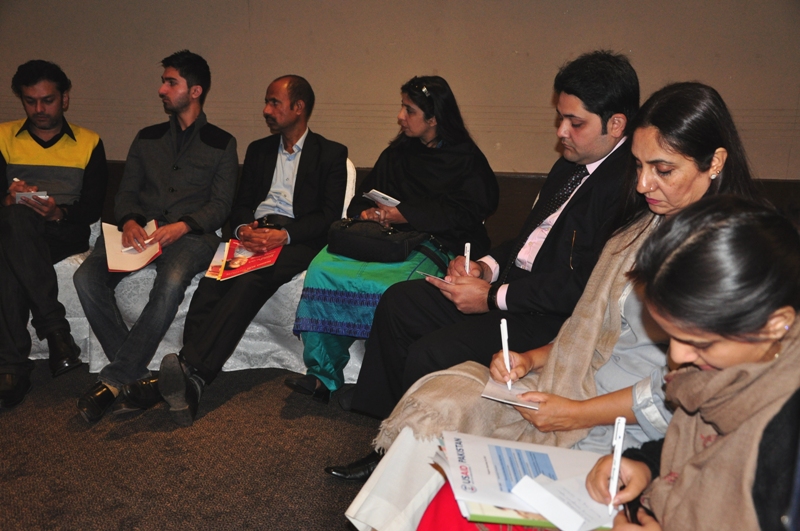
Workshop Participants engaged in group discussion.